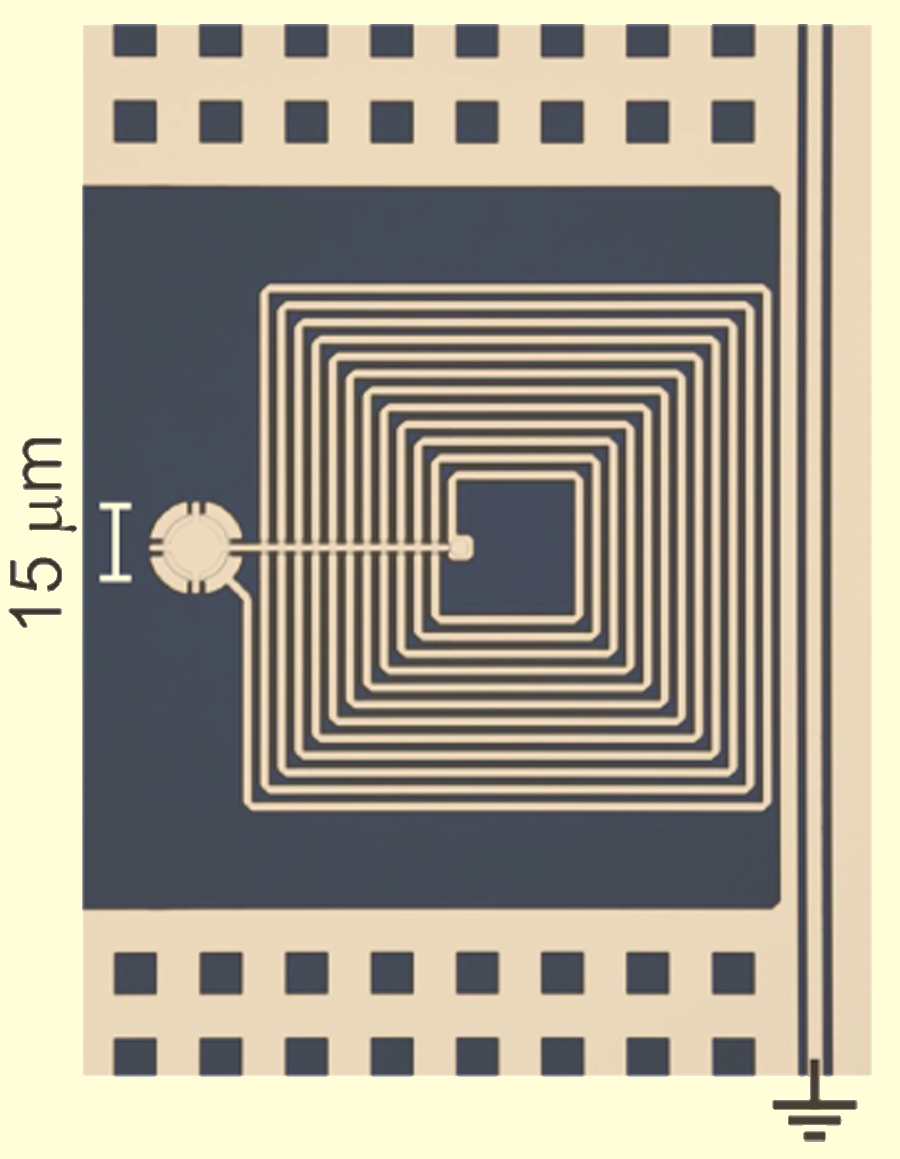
Micro-Drum Circuit

Colorized image of NIST micro-drum and circuit on a sapphire backing. JILA researchers demonstrated that the drum might be used as a memory device in future quantum computers.